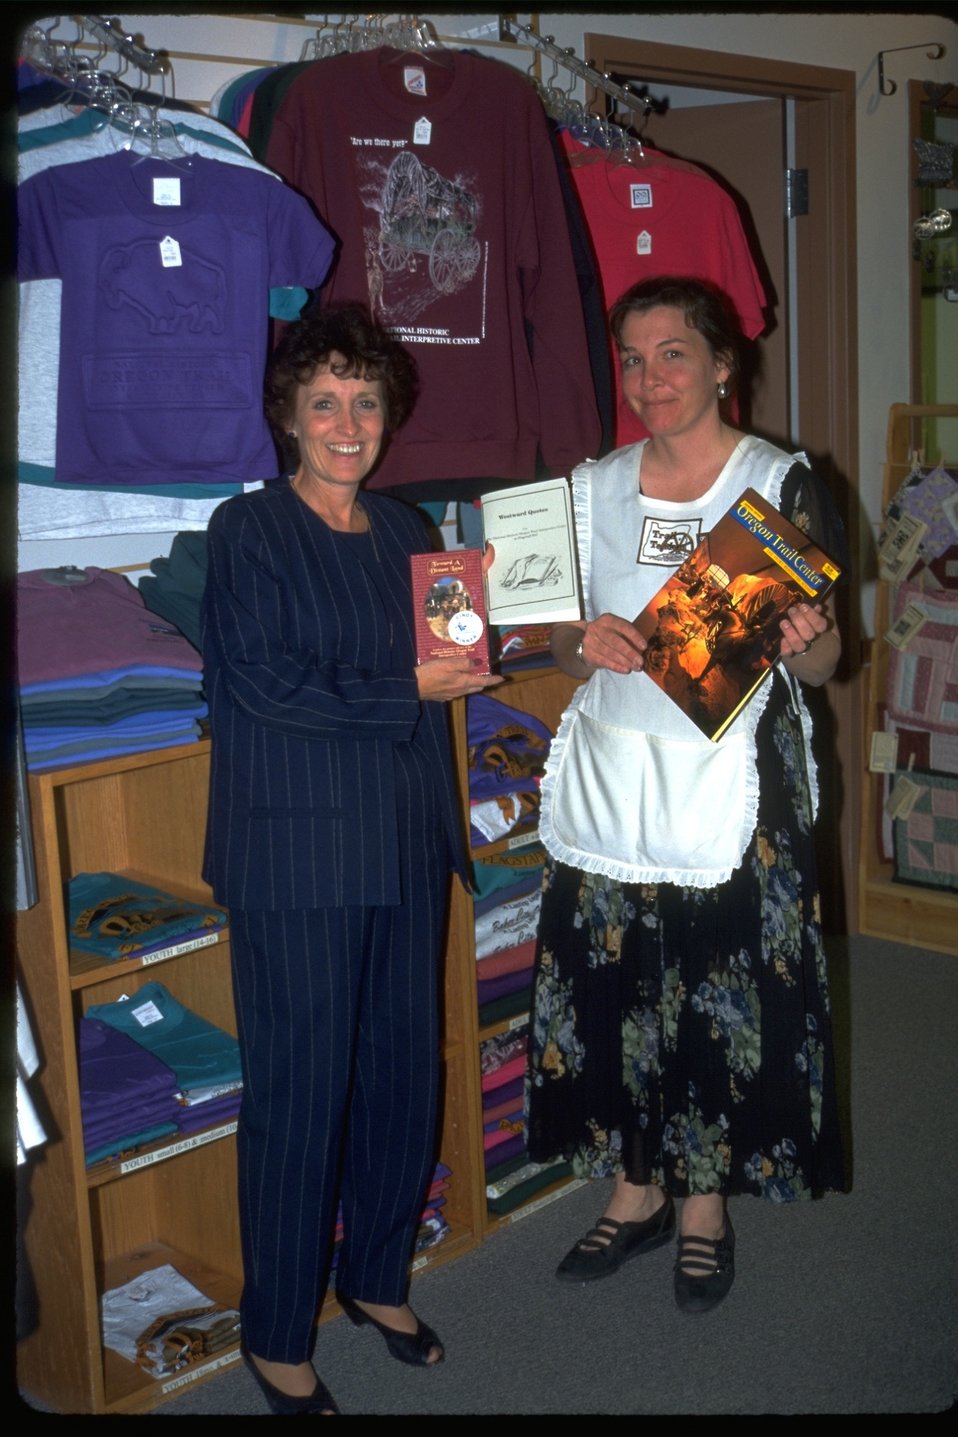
The NHOTIC shop with staff and products.